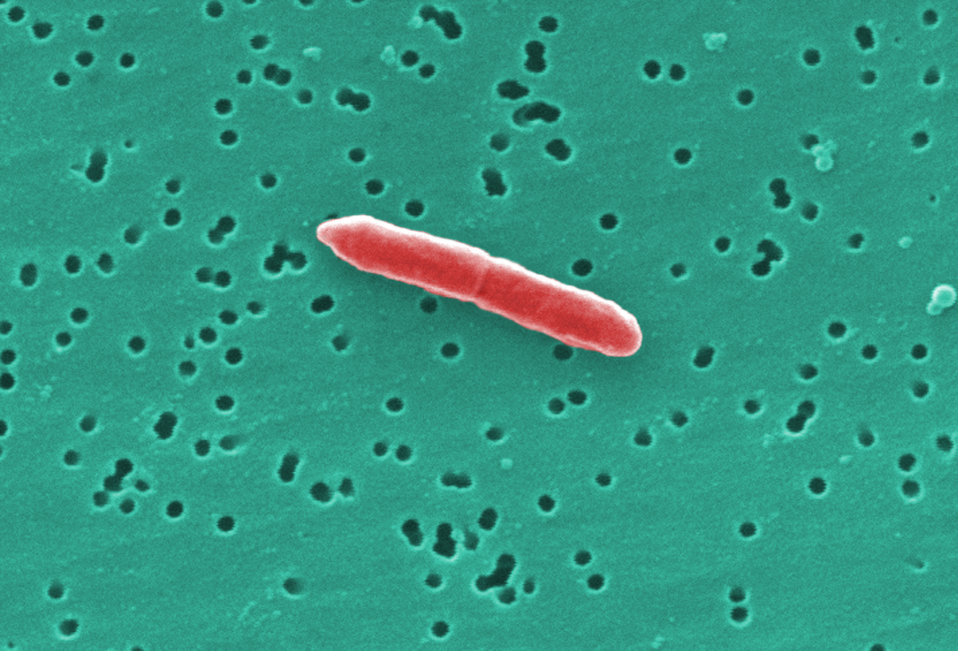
This digitally-colorized scanning electron micrograph (SEM) depicted a Gram-negative Sebaldella termitidis bacteria, as it was about to enter the process of cell division.